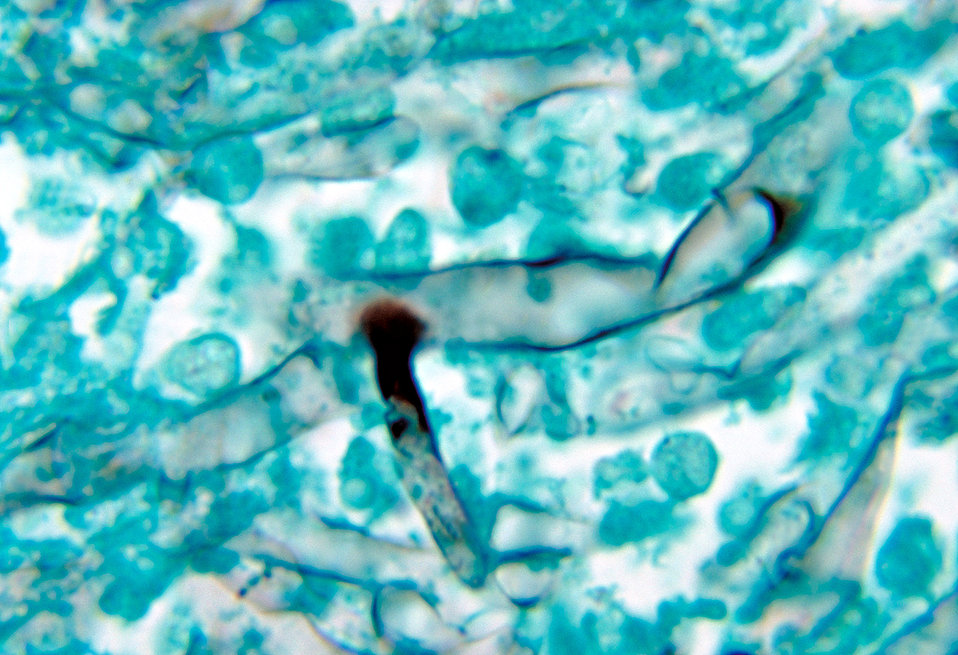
This slide describes the histopathologic changes seen in a heart valve due to zygomycosis caused by Mucor pusillus.